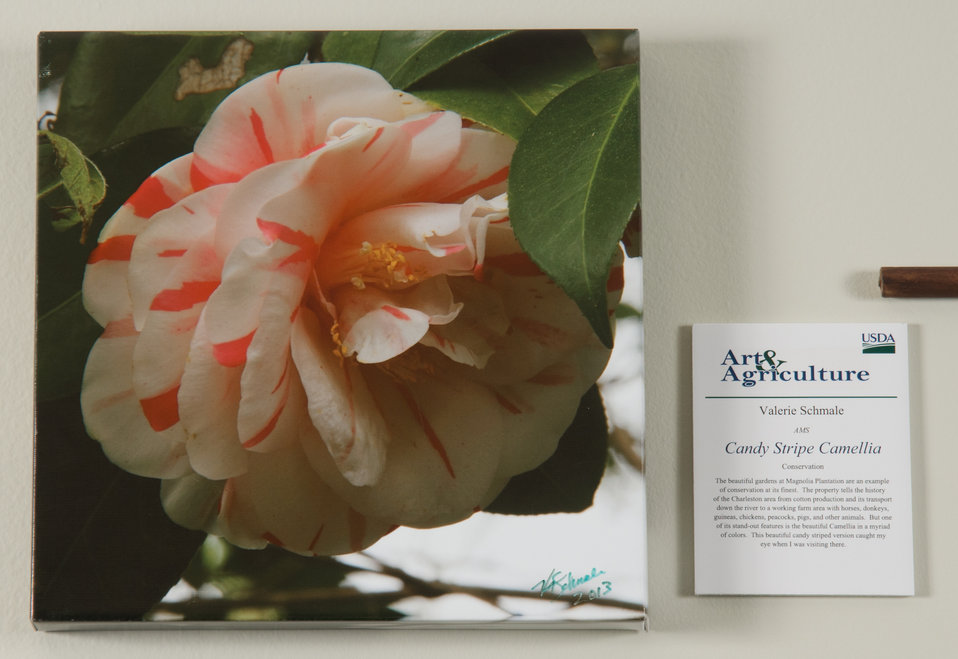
Online Viewer's Choice entries of the 2013 Art & Agriculture, Tuesday, July 9, 2013, in the South Building, Washington, D.C. Themes were expressed by employees from across the department and the contest was open to full-time and part-time USDA employees. Winning artwork will be displayed till the end of the year. U.S. Artistic expression is a creative outlet that is vital for an individual to grow and develop.